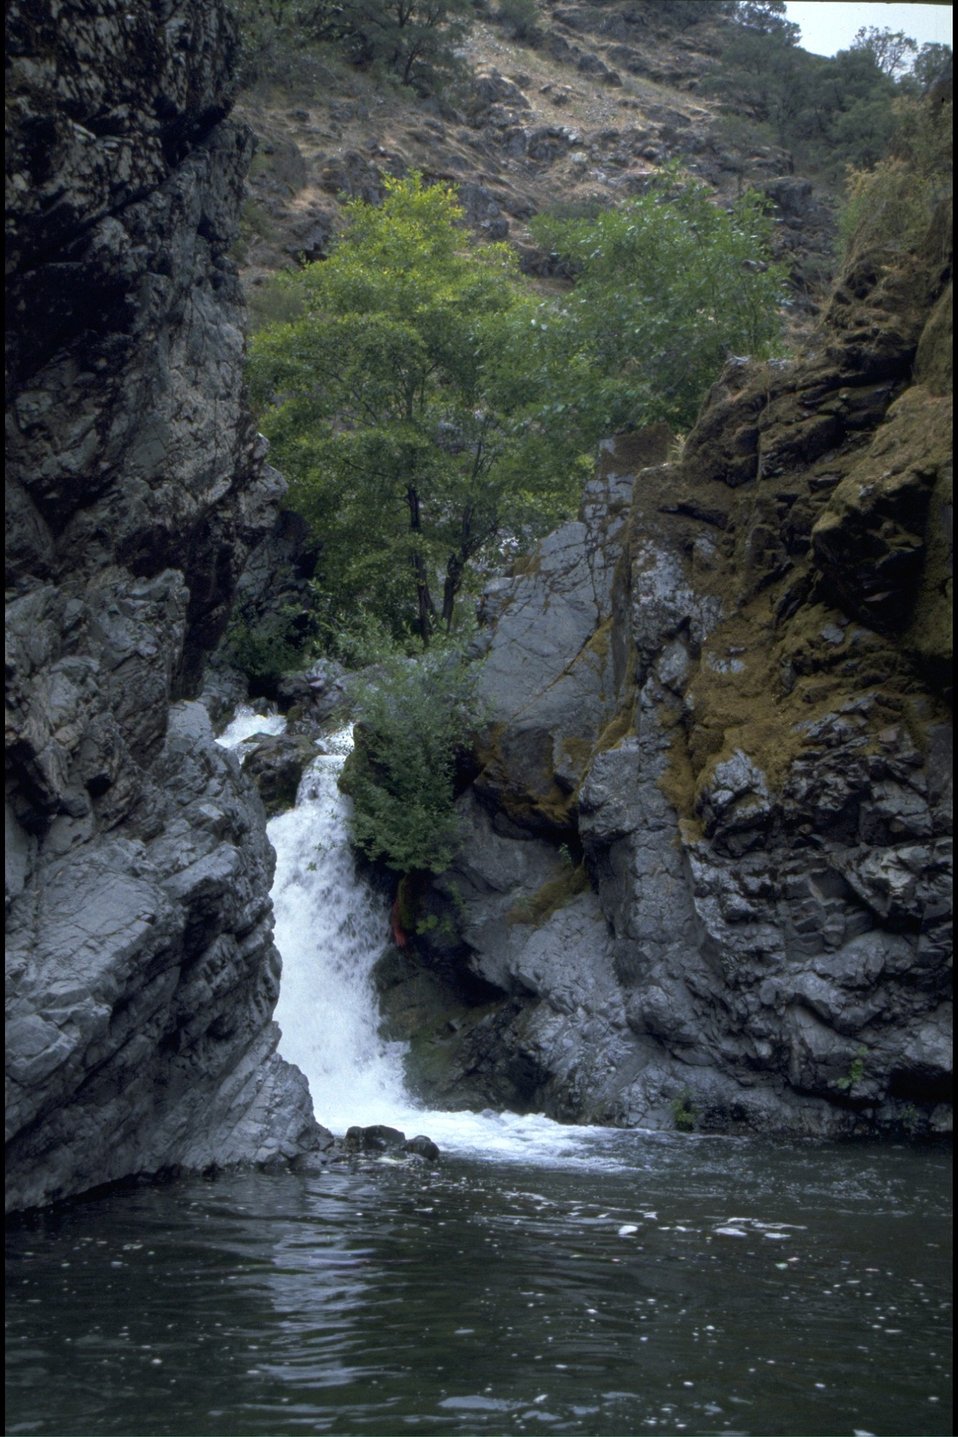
Rogue River; Big Windy Creek, wild section.